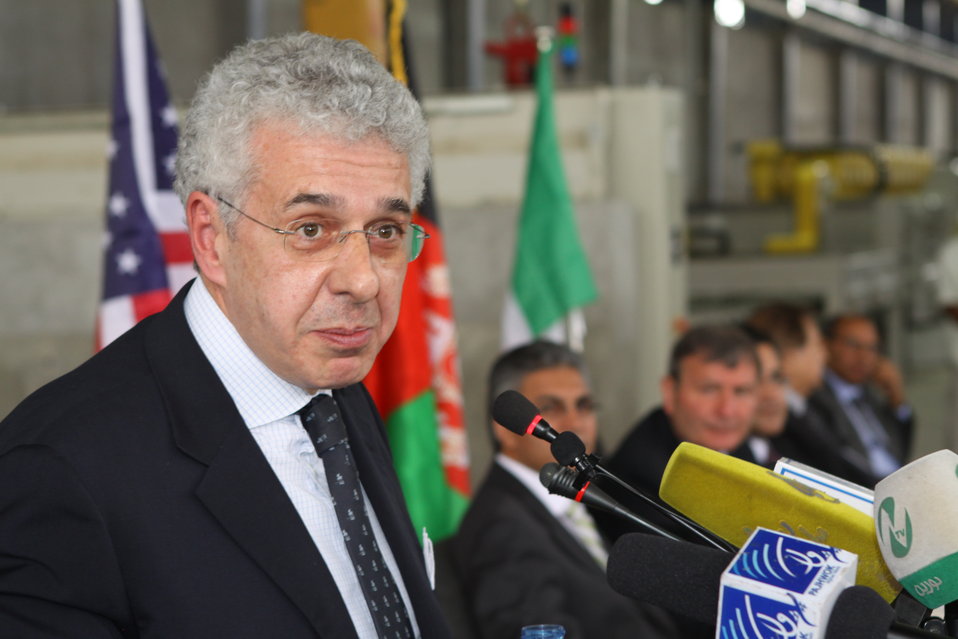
100525 Hirat Marble Conference 251